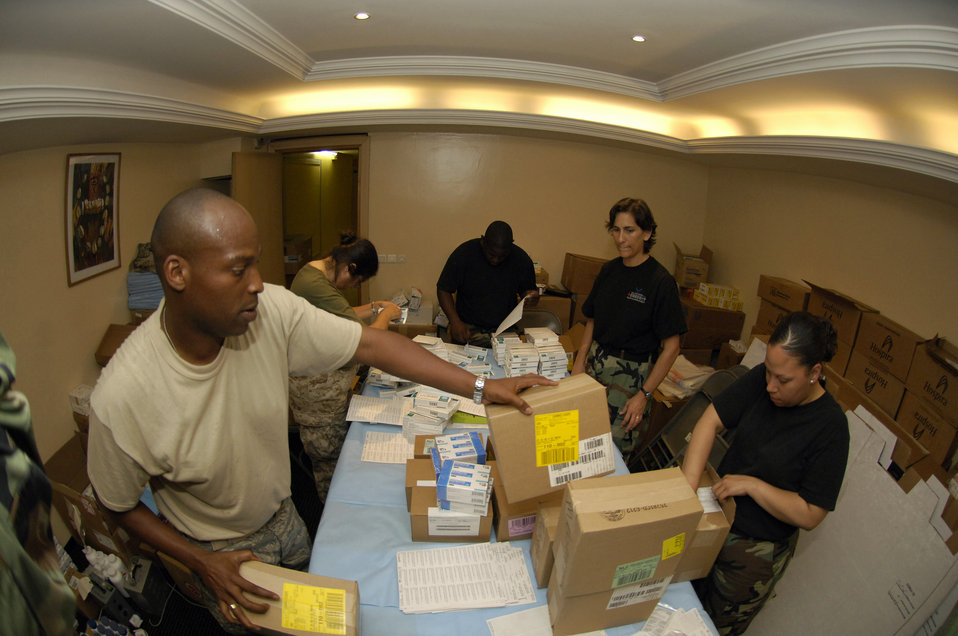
Pharmacist dispenses much-needed medicine for Malians

Servicemembers sort and label more than 40 medicines that will be distributed to thousands of Malians during MEDFLAG 08, July 14. More than 90 servicemembers deployed to Bamako, Mali, for MEDFLAG 08, a multinational medical training exercise designed to enhance medical capabilities and readiness for U.S. and African Forces.